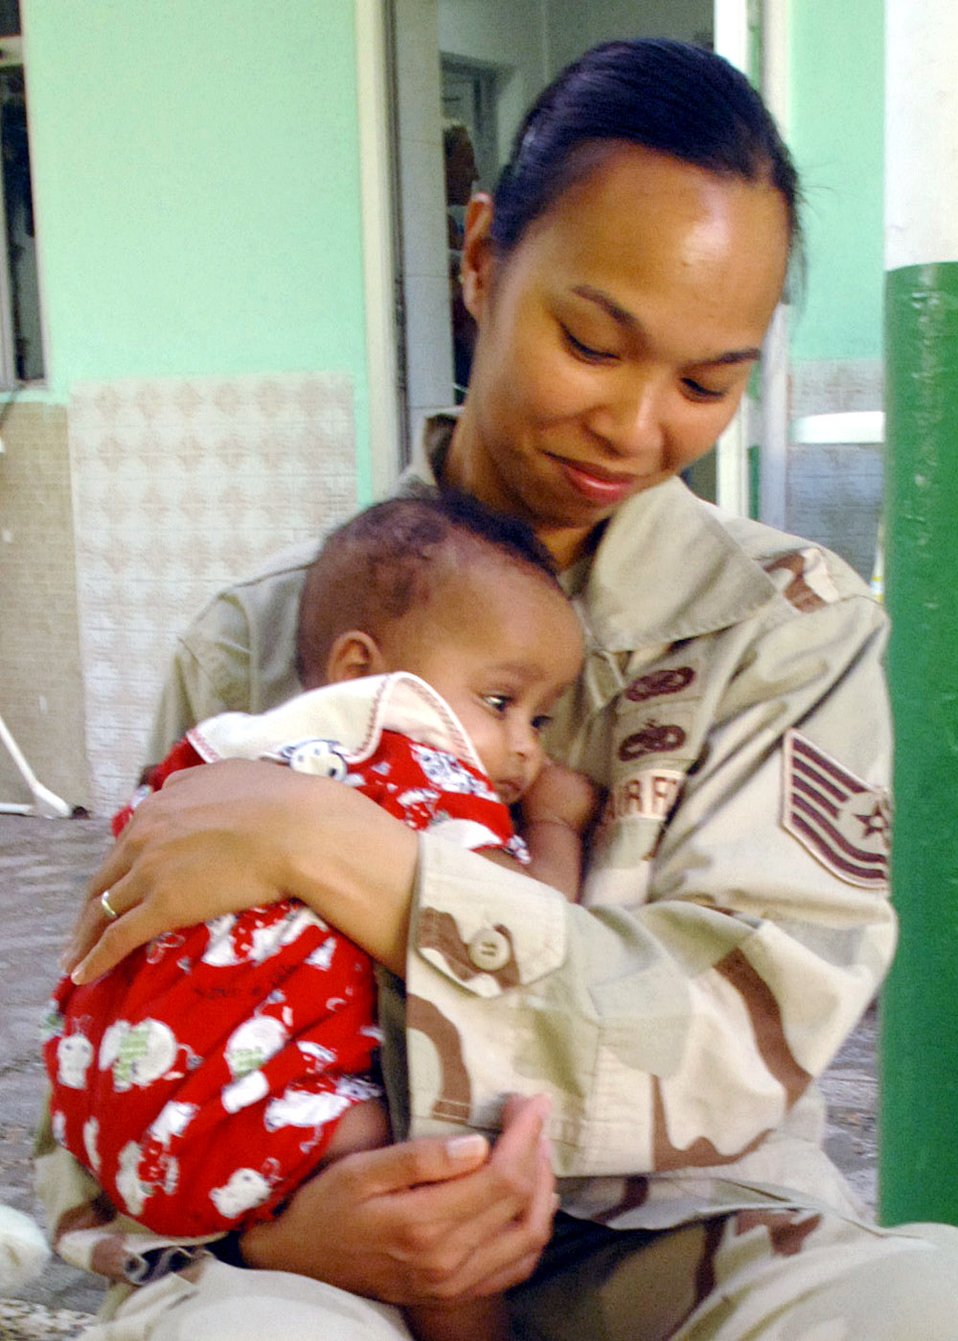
Comforting Hug

Tech. Sgt. Renee Crisostomo comforts an orphaned baby at the Franciscan Missionaries of Notre Dame Baby Orphanage in Djibouti City, Djibouti. Sergeant Crisostomo, a broadcaster on the U.S. Central Command News Team, was on assignment to feature Airmen supporting the Combined Joint Task Force - Horn of Africa.